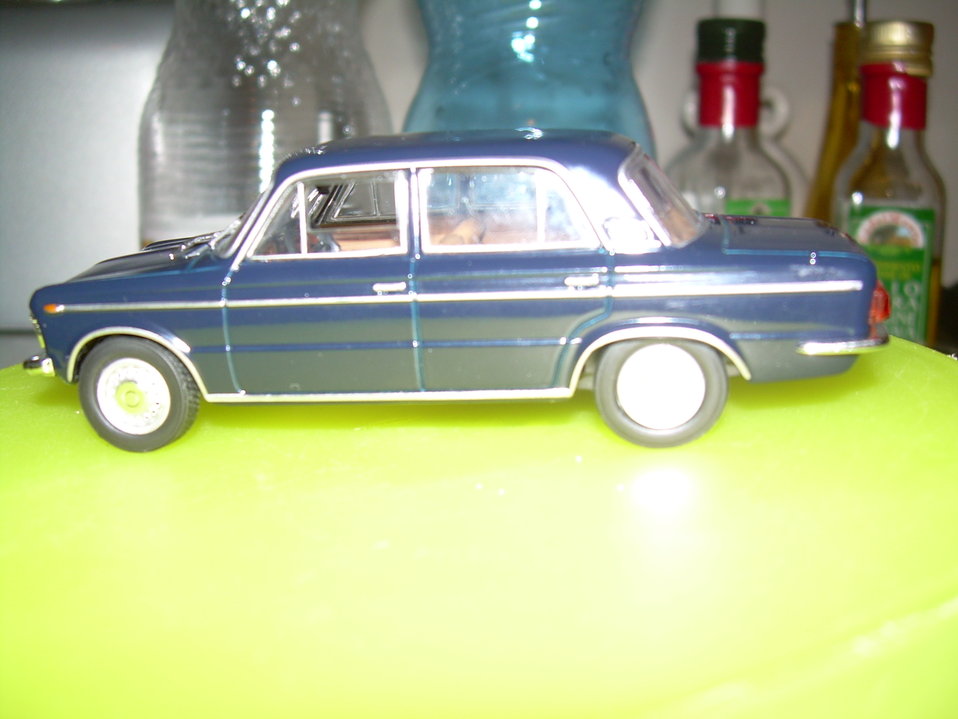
Fiat 125 Special model